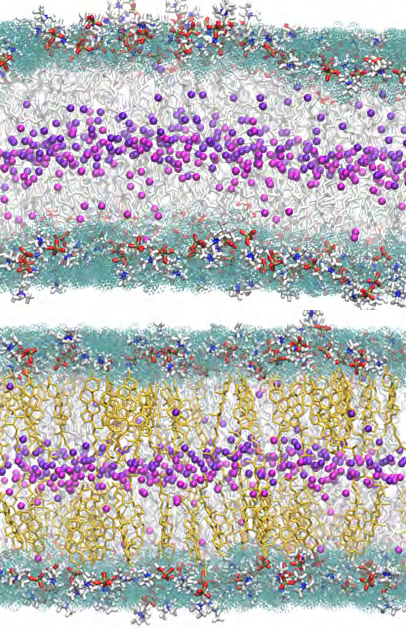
Lipid Molecules

The purple 'tails' of the lipid molecules that form the cell membrane are far less orderly in the absence of cholesterol (top image) than when cholesterol is present (bottom), a finding made possible by magnifying the membrane with neutron diffraction.